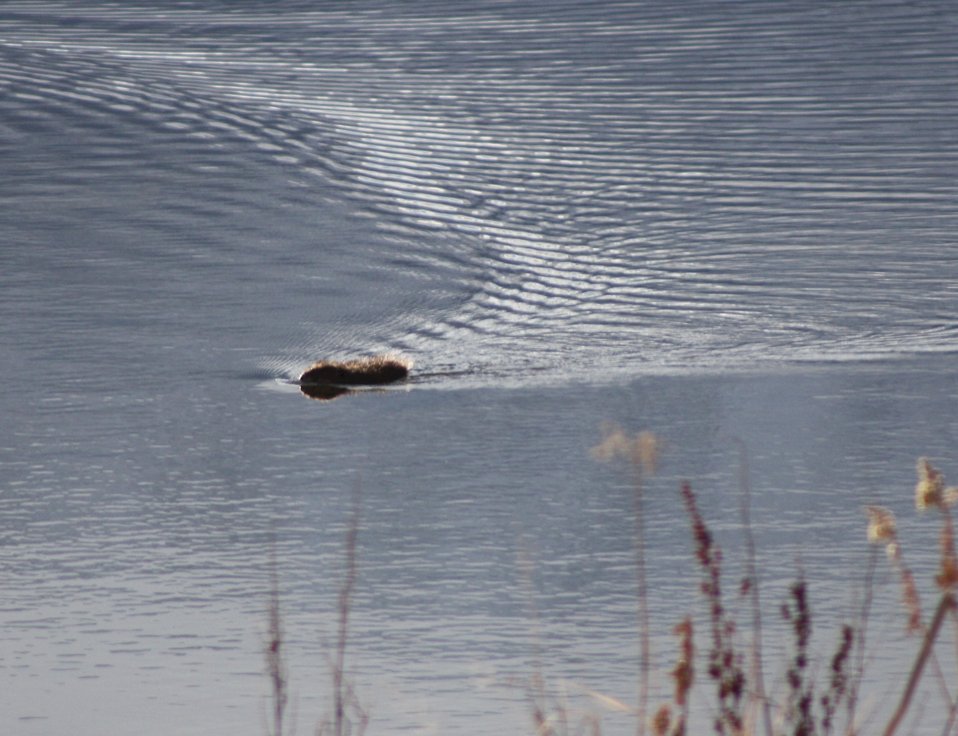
Muskrat in Water

A muskrat (Ondatra zibethica) meanders about with the increased thawing as we headed towards the official start of spring 2011 at Lee Metcalf National Wildlife Refuge in Montana.